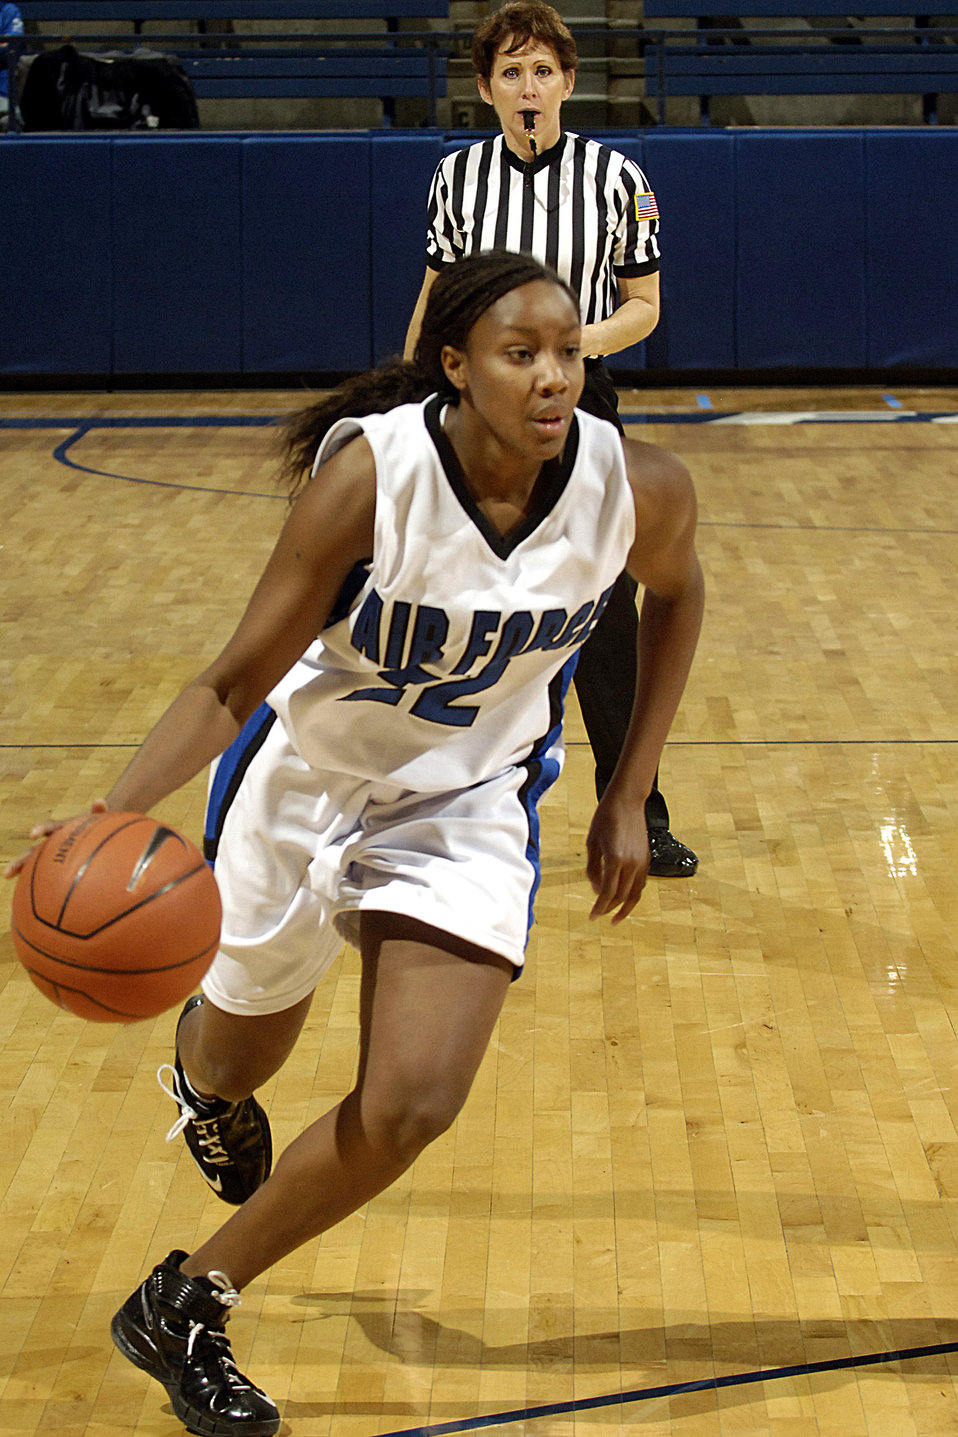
Lady Falcons fall to Utah

U.S. Air Force Academy Falcon senior guard Jamie Davis drives toward the basket during the 60-50 loss against Utah Jan. 9 in Clune Arena at Colorado Springs, Colo.